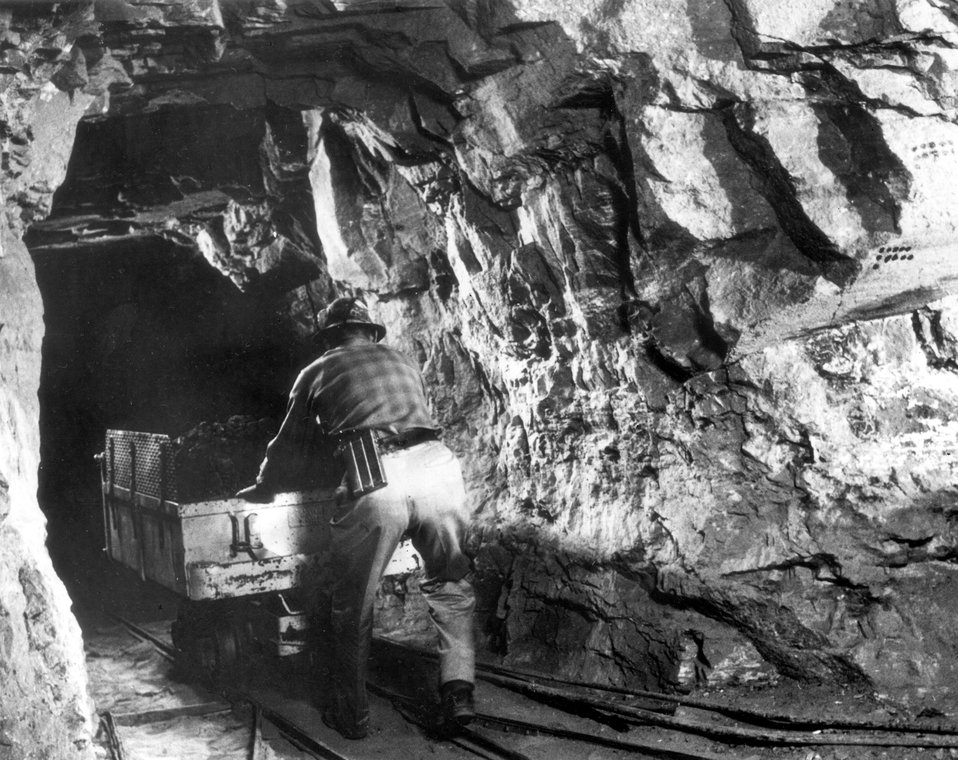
Pushing a loaded car of uranium ore in underground mine on the Colorado Plateau. c. 1957